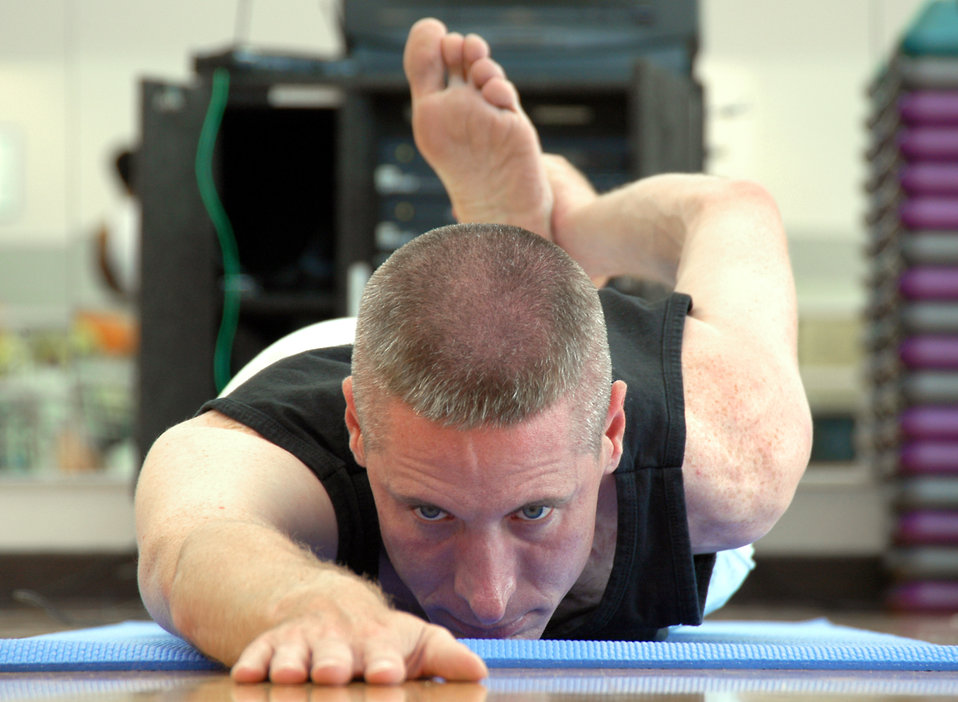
Yoga practice

LOS ANGELES AIR FORCE BASE, Calif. -- Capt. William Uhl holds a half-frog asana, or pose, during the cool-down phase of his hour-long yoga class in the fitness center here. He has been practicing yoga for four years and is certified to teach yoga, Pilates and Power Stretch, which combines yoga and Pilates. The captain is an analyst for the Space and Missile Systems Center's intelligence directorate.